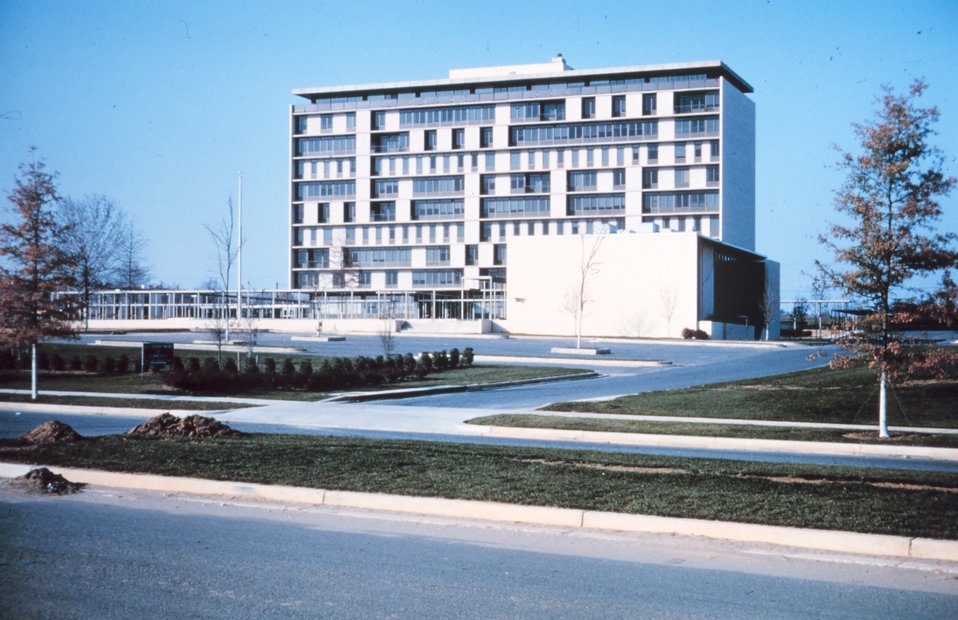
6001 Executive Boulevard, Rockville, Maryland, designated the Washington Science Center. The home of the Coast and Geodetic Survey and the headquarters of the satellite triangulation program. This building was brand new at the time . It was razed in the late 1990's.